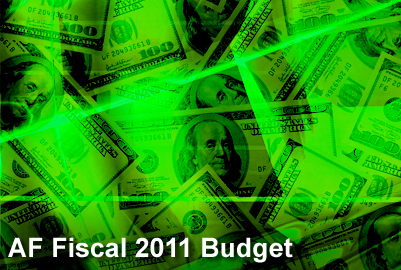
AF Fiscal 2011 Budget

The Air Force FY 2011 budget request supports a balanced approach in today's operations while ensuring new capabilities, force structure, skills and technologies to meet tomorrow's challenges.